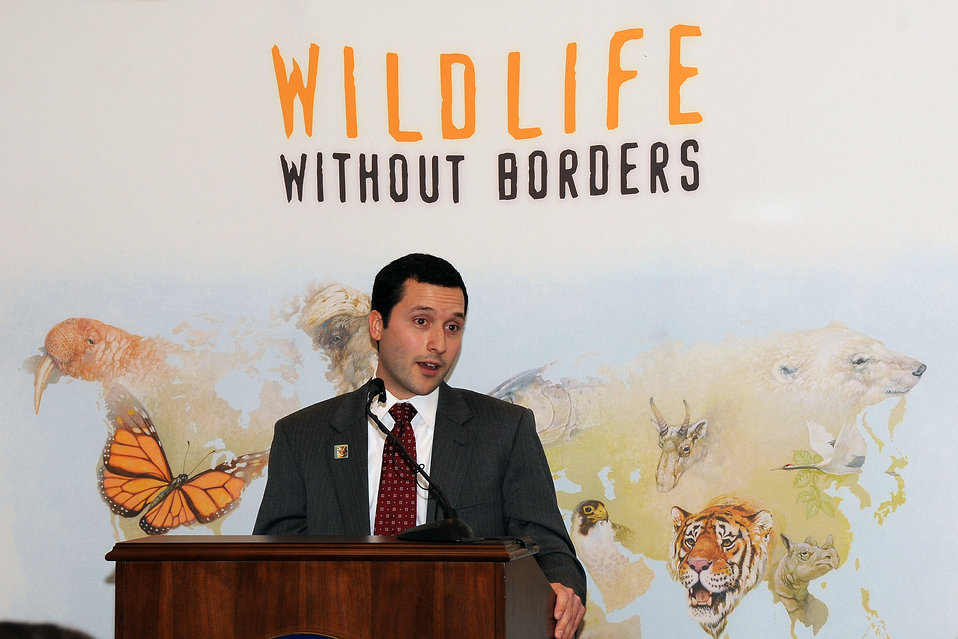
Save Vanishing Species on Capitol Hill

Austin Sherer - BBDO